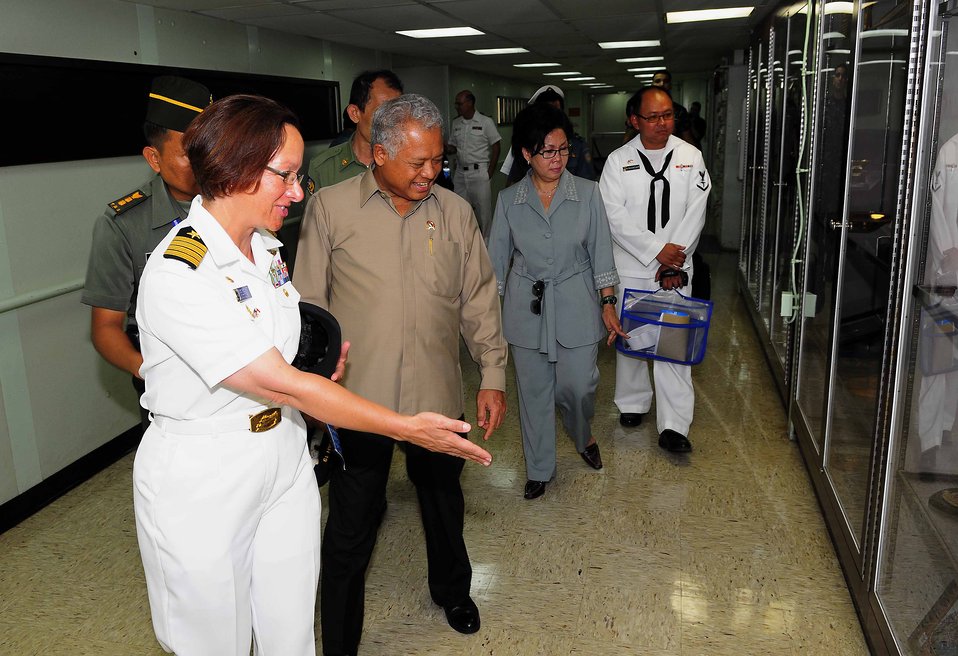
PP 2010 Commander Capt. Franchetti Shows Indonesian Defense Minister Dr. Purnomo Yusgiantoro a Trophy Case

Pacific Partnership 2010 Commander Capt. Lisa M. Franchetti shows Indonesian Defense Minister Dr. Purnomo Yusgiantoro a trophy case aboard the Military Sealift Command hospital ship USNS Mercy (T-AH 19) on August 2, 2010. Mercy is in Ambon, Indonesia, participating in Sail Banda 2010, a series of events hosted by the Government of Indonesia to promote the future of small islands.